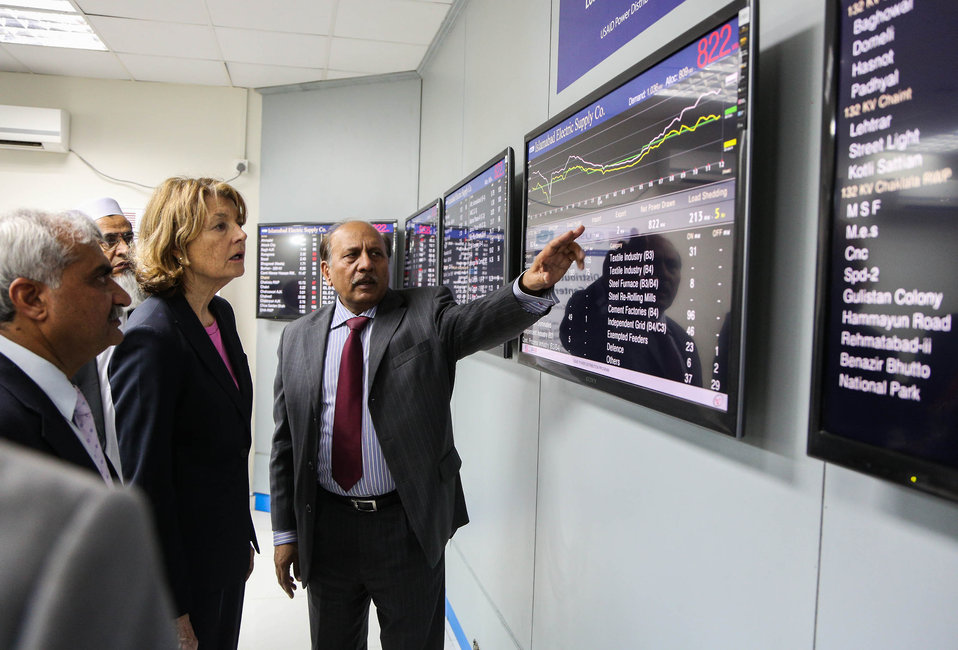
U.S. Improves IESCO’s ability to Reduce Unscheduled Load Shedding

Nancy Estes, Acting Mission Director, United States Agency for International Development (USAID), touring the Power Distribution Control Center (PDCC) at IESCO.